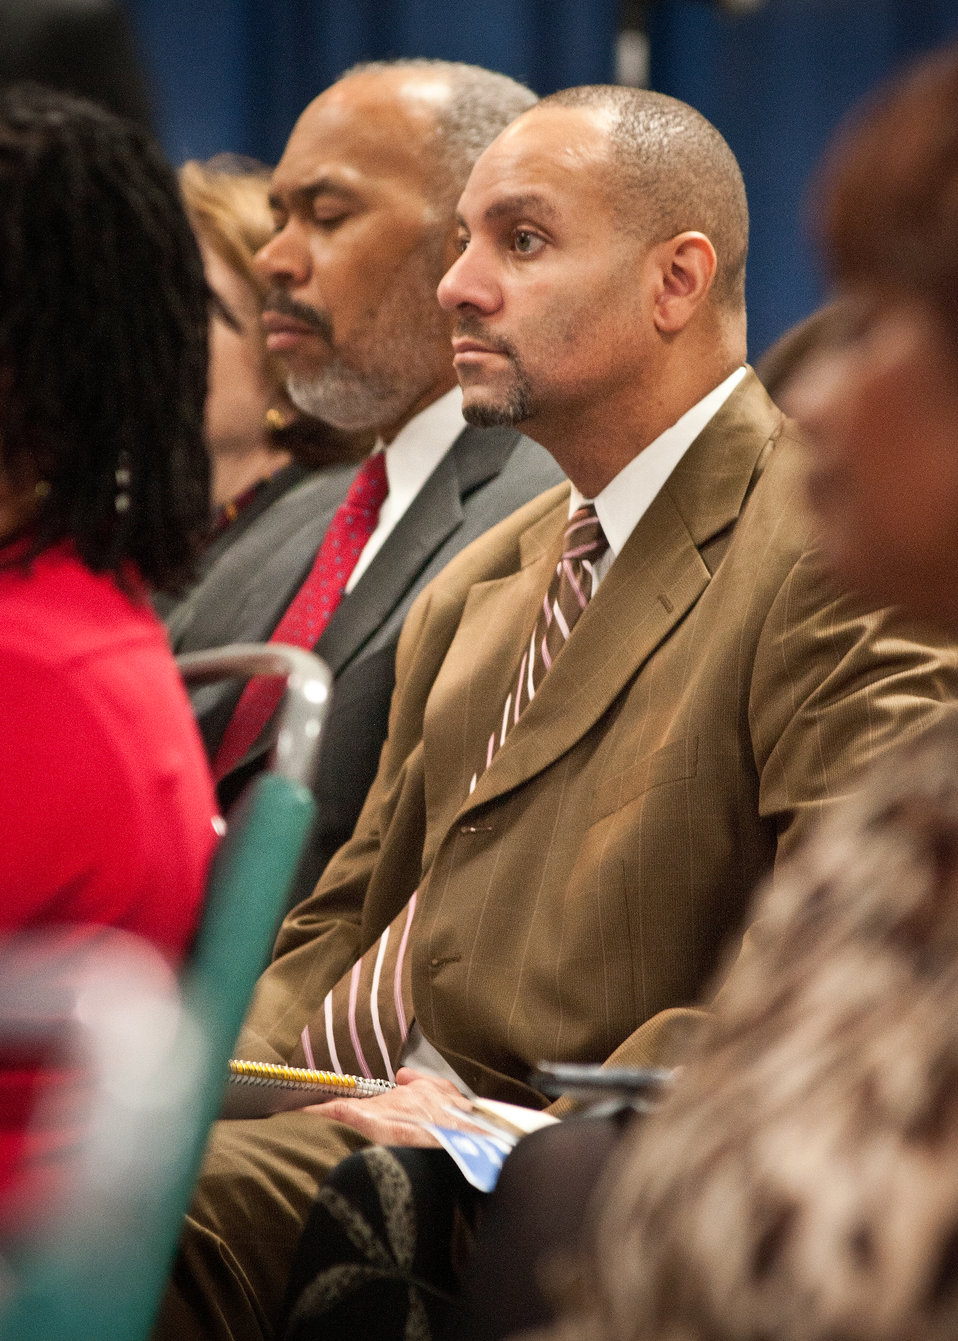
Agriculture Secretary Tom Vilsack offered U.S. Department of Agriculture (USDA) employees the opportunity to ask questions about the Blueprint for Stronger Service Initiative and hear directly from the Secretary Vilsack during the Ask The Secretary event held in the South Building Cafeteria, in Washington, D.C., on Wednesday, March 21, 2012, The Blueprint for Stronger Service Initiative aims to build a modern and efficient service organization that is closely timed with technological innovations - and better suited to respond to 21st century agricultural challenges.